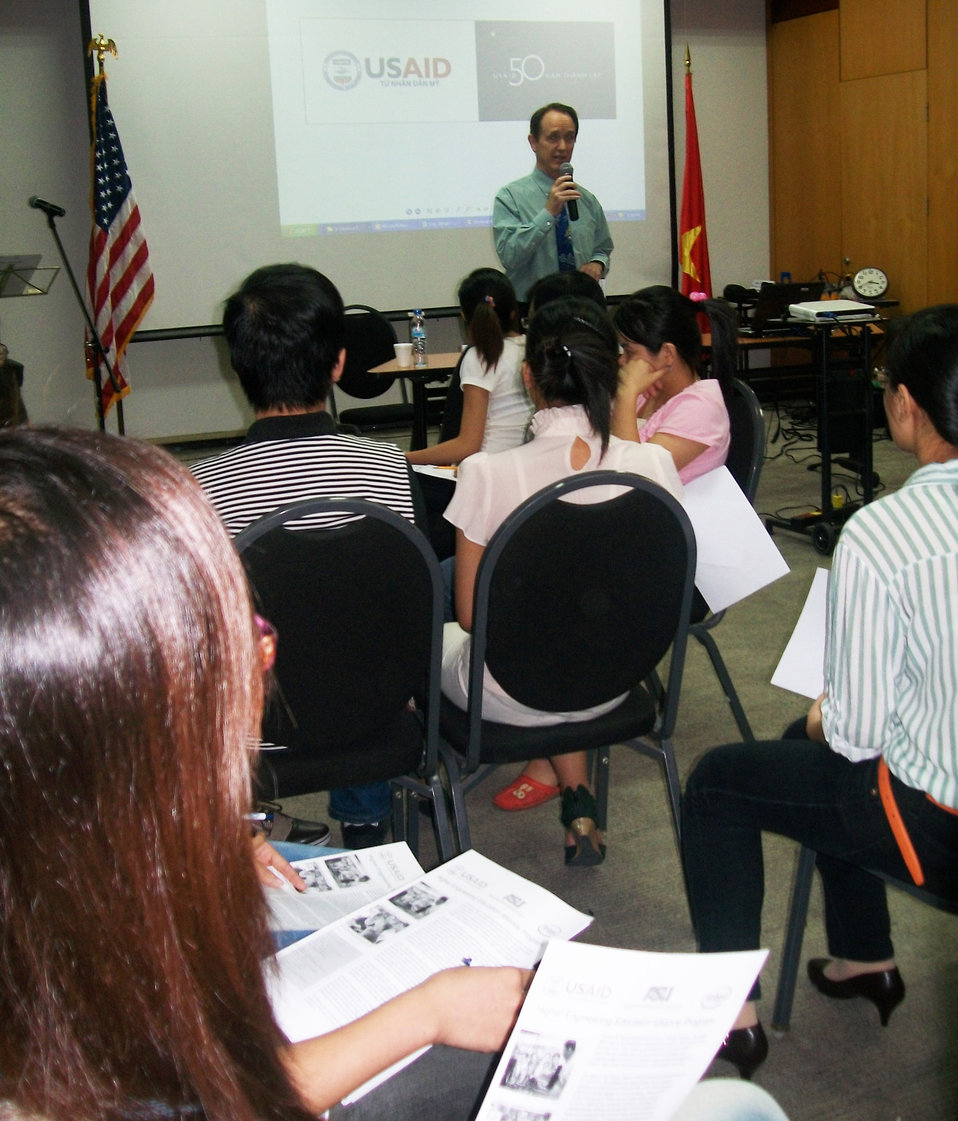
American Center and USAID host Debate Club on Higher Education

USAID/Vietnam Mission Director Francis Donovan address students and discusses the USAID-supported Higher Engineering Education Alliance Program with Arizona State University, Intel, and others.